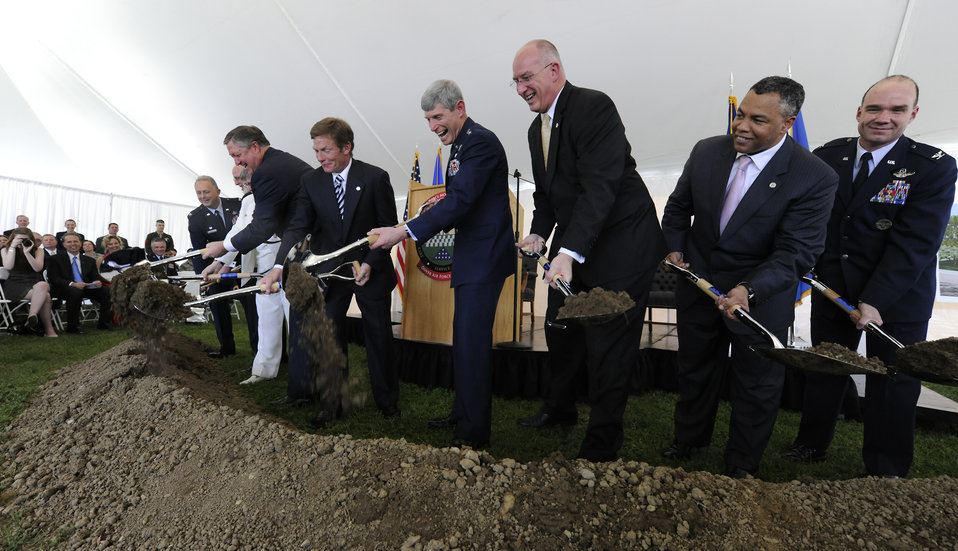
Fisher House Groundbreaking at Dover

Secretary of the Air Force Michael B. Donley, center-left, Kenneth Fisher, chairman of the board of trustees for the Fisher House Foundation, Gen. Norton Schwartz, Air Force Chief of Staff, center, and others, turn shovels filled with soil in a groundbreaking ceremony for a new Fisher House at Dover Air Force Base, Del. This Fisher House is the first to be built and dedicated to provide hospice services to family members of fallen servicemembers.